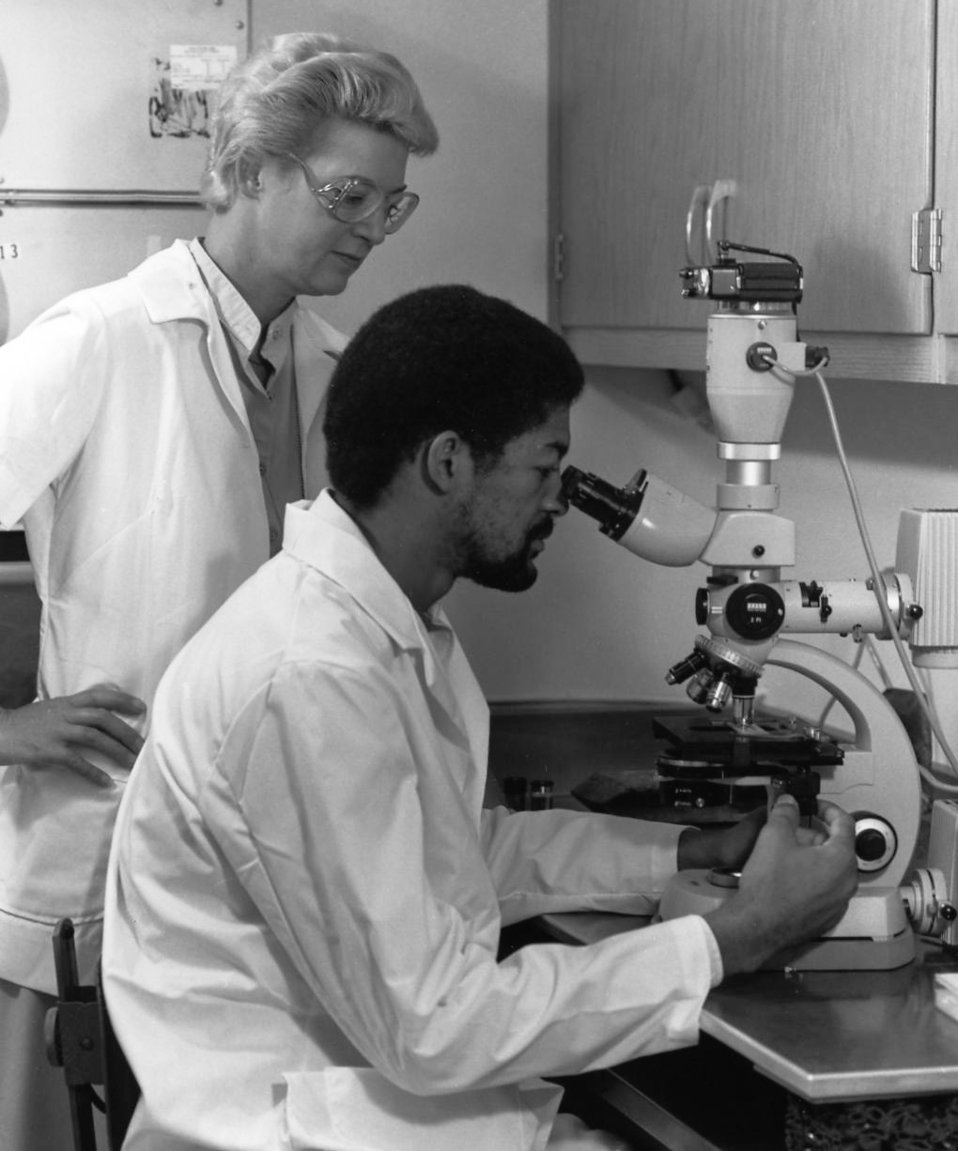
This photograph showed two Centers for Disease Control laboratorians, both from the Division of Viral and Rickettsial Diseases, looking at lab specimens through a microscope.